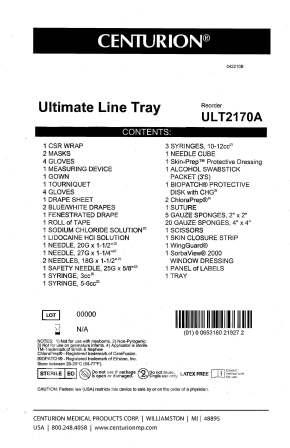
RECALLED - Convenience kits which contain bacteriostatic sodium chloride solution by American Regent

April 1, 2011 - Product Recall - Centurion Medical Products Initiates Voluntary Recall of Customized Convenience Kits (including select Central Venous Catheter, PICC Insertion, and VAD Trays) that contain American Regent’s Bacteriostatic Sodium Chloride Injection, USP, 0.9% 30 mL Multiple Dose Vials.